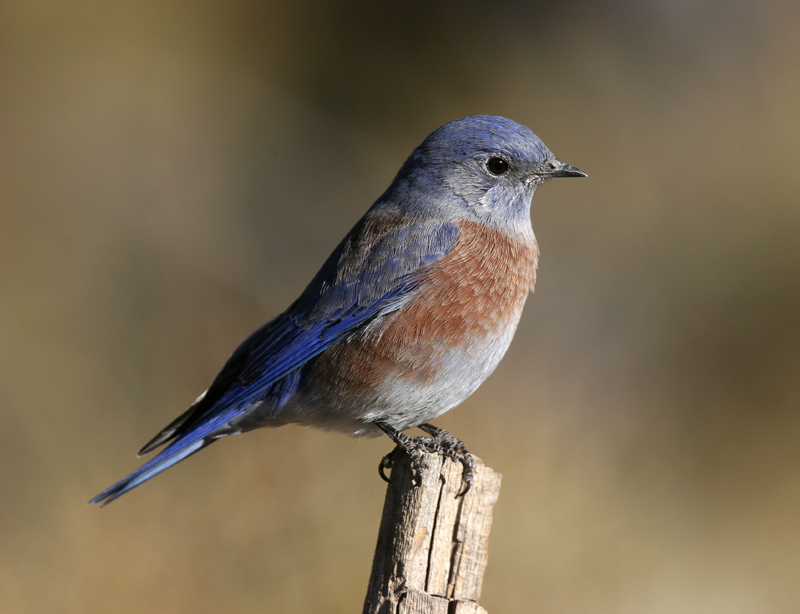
Male Bluebird USFS

Previously abundant in western Oregon, the Western Bluebird suffered a precipitous decline through degradation of habitat and avian competition. The U.S. Forest Service’s partnership with the Lincoln County Chapter of Oregon Hunter’s Association (OHA) at the Hebo Ranger District in the Siuslaw National Forest near Corvallis, OR is helping to restore and maintain habitats for wildlife and reduce invasive plants.